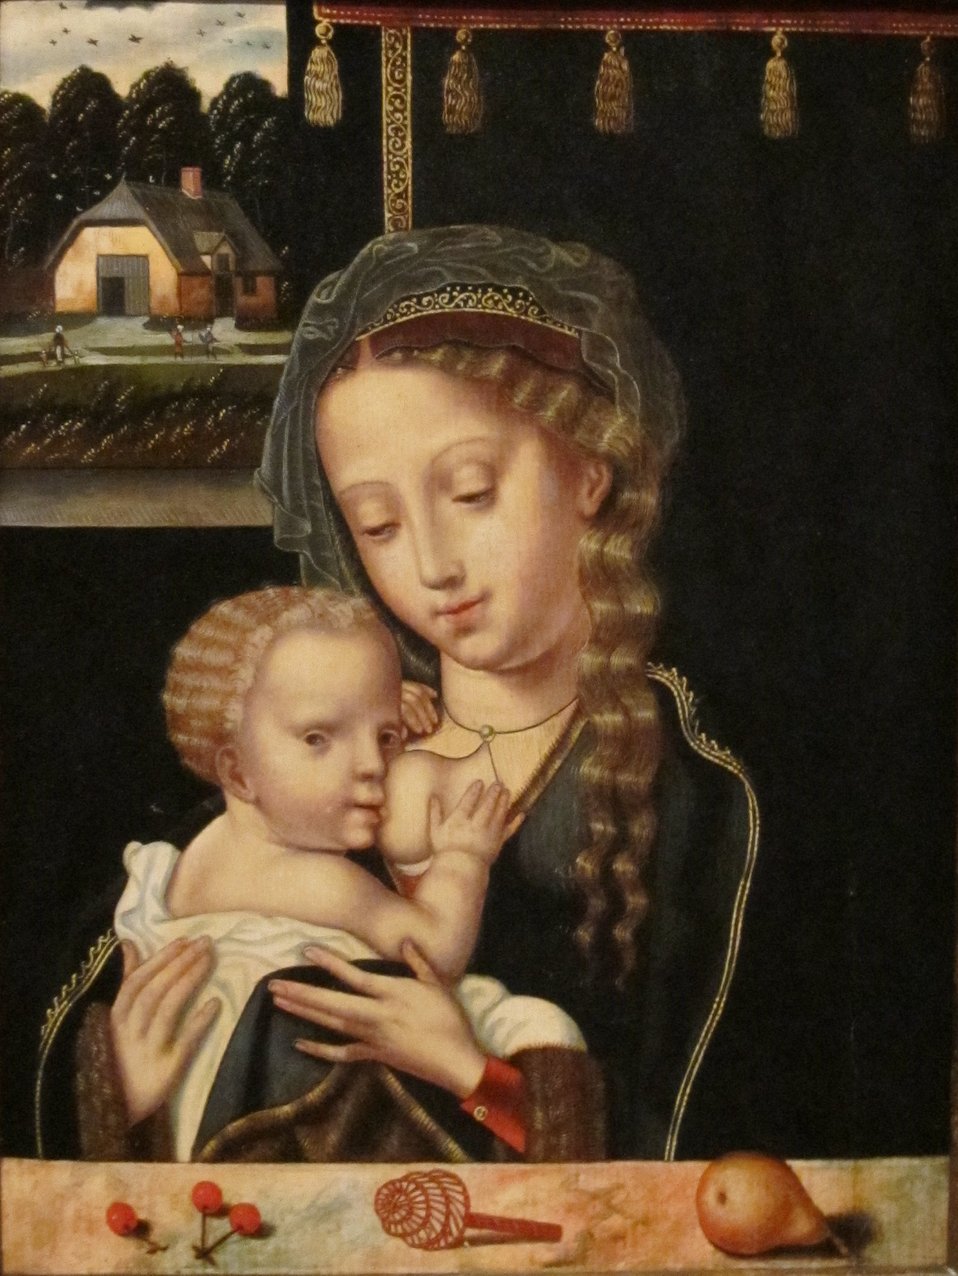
'Madonna and Child Nursing', Flemish school oil on wood painting, early 16th century